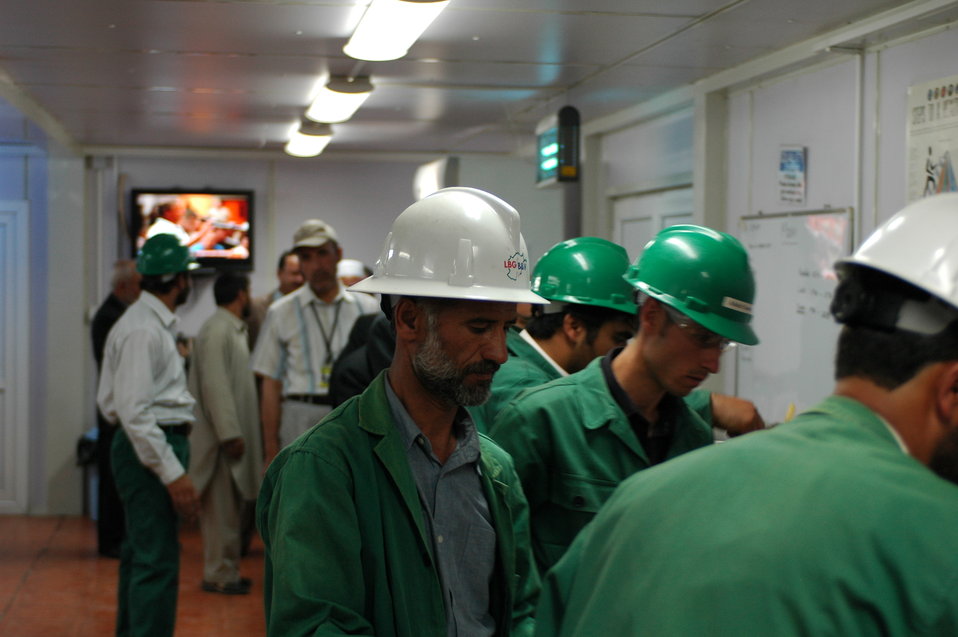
105 MW Tarakhil Power Plant Handover